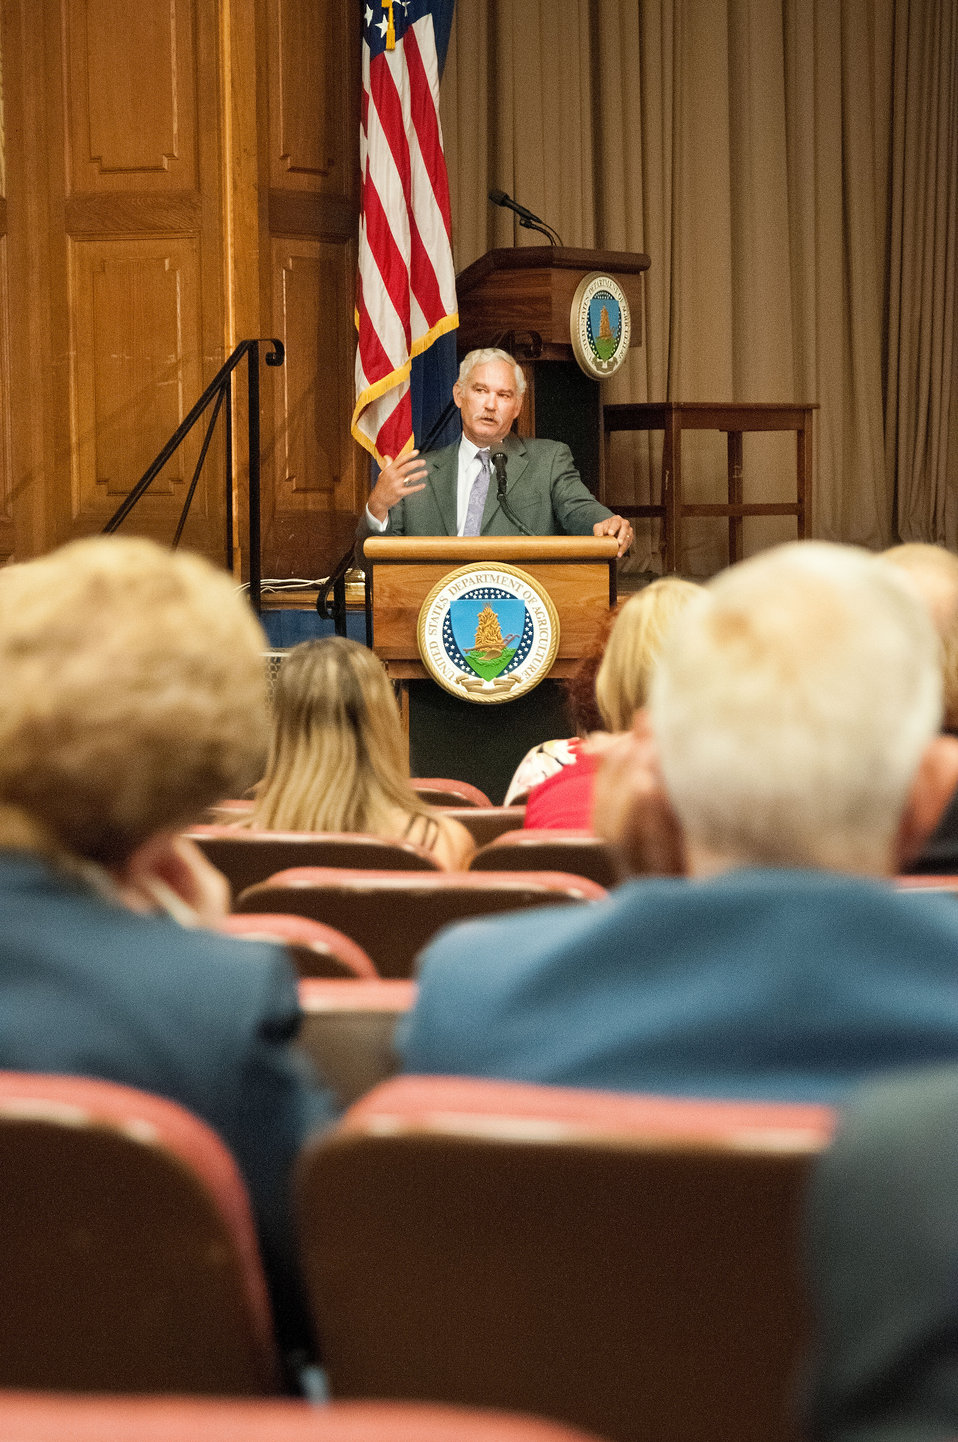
Agriculture Farm and Foreign Agricultural Services (FFAS) Under Secretary Michael Scuse, addresses the National Farmers Union at the U.S. Department of Agriculture (USDA) in Washington, D.C. on Monday, Sept. 10, 2012. Under Secretary Scuse discussed economics, exports and the 2012 Farm Bill.